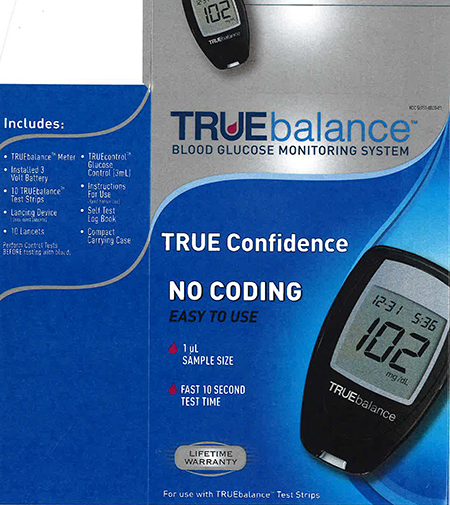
RECALLED – Blood Glucose Meters

January 2, 2014 – Product Recall – Nipro Diagnostics, Inc. Initiates Voluntary Recall of Certain TRUEbalance and TRUEtrack Blood Glucose Meters.